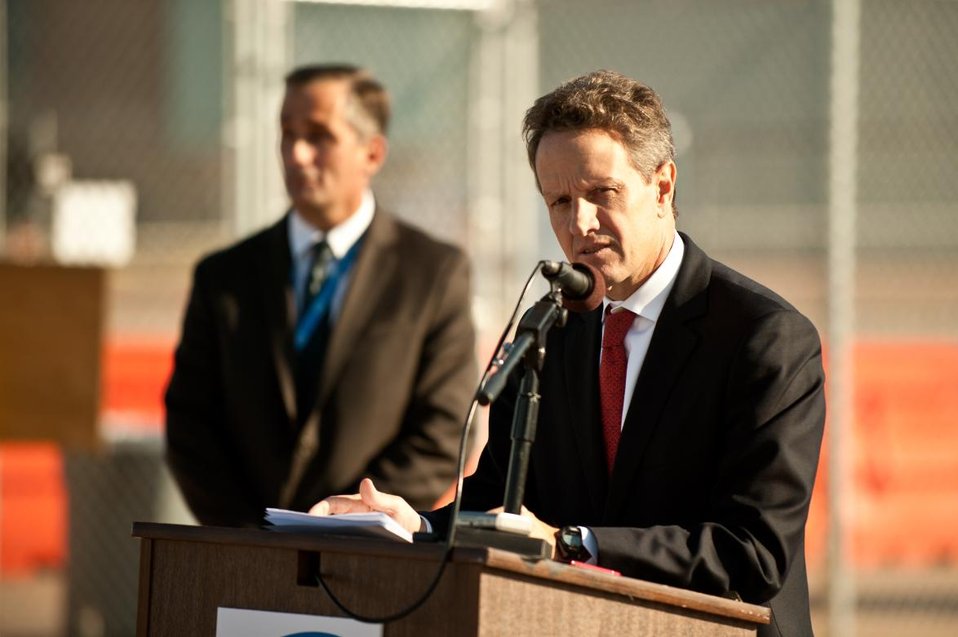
Treasury Secretary Geithner Tours Intel Facilities in Arizona

“The future of our economy depends on companies like Intel continuing to make innovative products in America for sale around the globe. And to help ensure U.S. companies are as competitive as they can be, government must do its part,” Secretary Geithner said in a press conference at the conclusion of his visit. “The President has put forth a comprehensive package of investments and tax incentives to grow our economy and get Americans back to work. With millions of jobs hanging in the balance, Congress should not turn its back on these measures.”